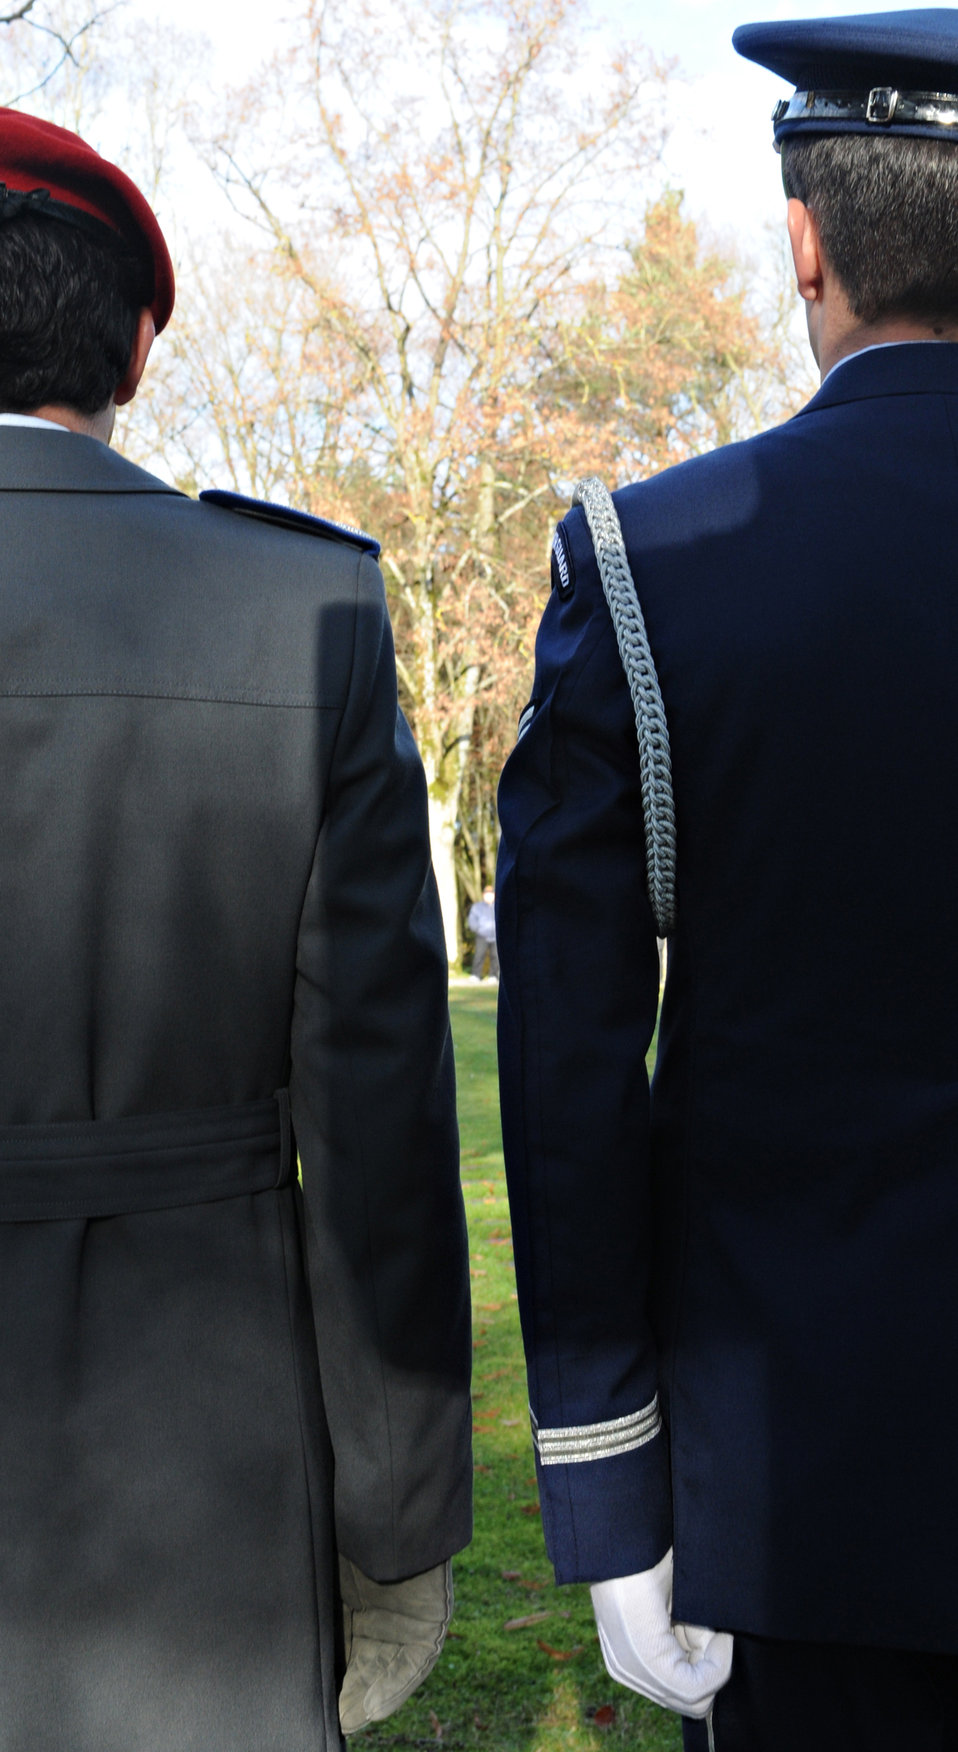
National Day of Mourning

A German soldier and a U.S. Air Force honor guard member stand side-by-side during a Volkstrauertag, or German National Day of Mourning, ceremony Nov. 11, 2010, at Bitburg, Germany.